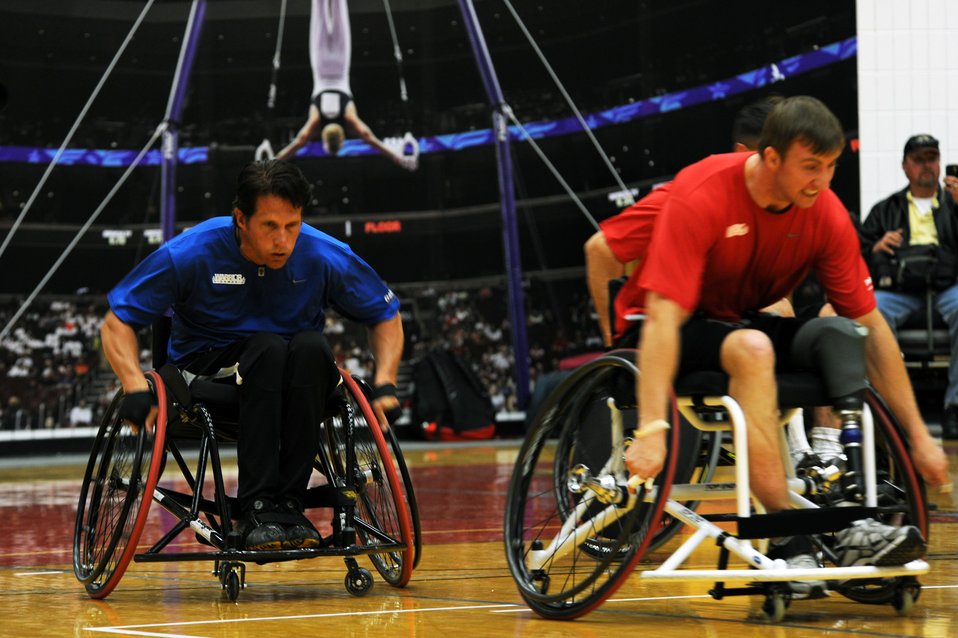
Warrior Games Team Air Force Basketball

Jason Morgan races down the court during a wheelchair basketball game against the Marines Corps team May 11, 2010, during the Warrior Games held at the Olympic Training Center in Colorado Springs, Colo. The Marines routed the Air Force team 68-13. Warrior Games competition began May 10 and finishes on May 14, 2010.